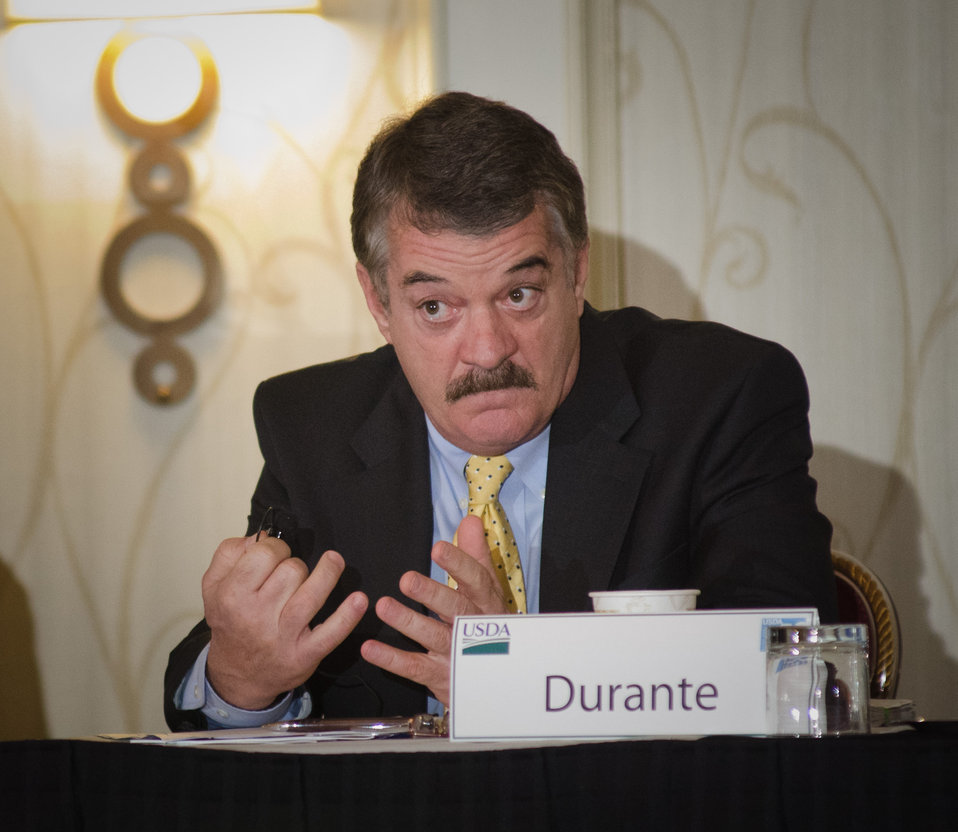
Clean Fuels Development Coalition Executive Director Douglas Durante responds to a question during the Renewable Energy session on “Moving Renewable Energy Forward,” at the 2012 Agricultural Outlook Forum, “Moving Agriculture Forward, Growing, Innovating and Celebrating 150 Years” held at the Crystal Gateway Marriott Hotel in Arlington, Virginia, on Thursday, February 23, 2012. This year’s forum coincides with the 150th anniversary of the Department of Agriculture addressing economics, marketing, research, food safety, nutrition, conservation, rural development, alternative energy, trade and many other agricultural issues.